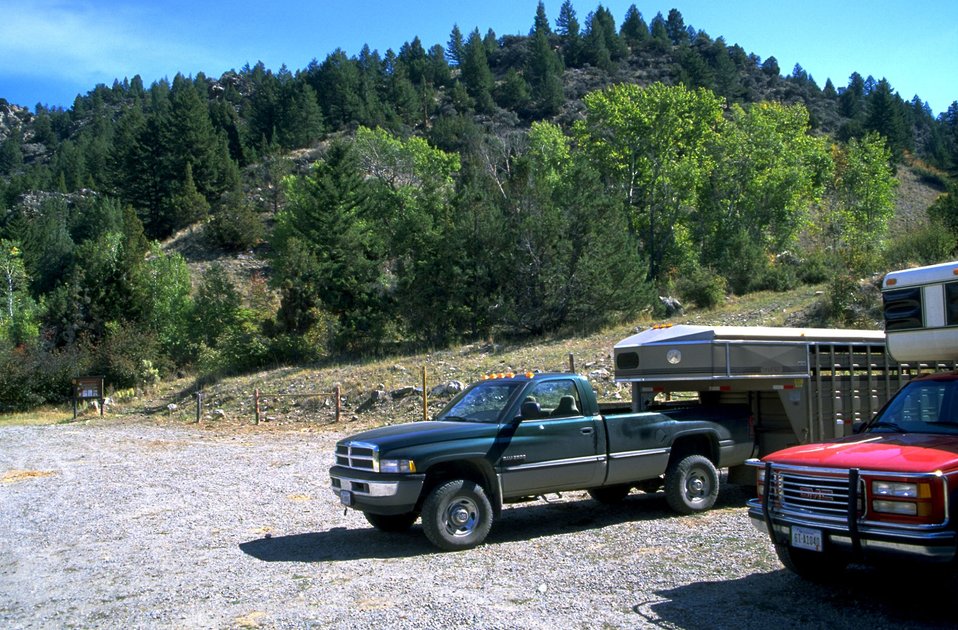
Vehicles in the parking lot at Trail Creek